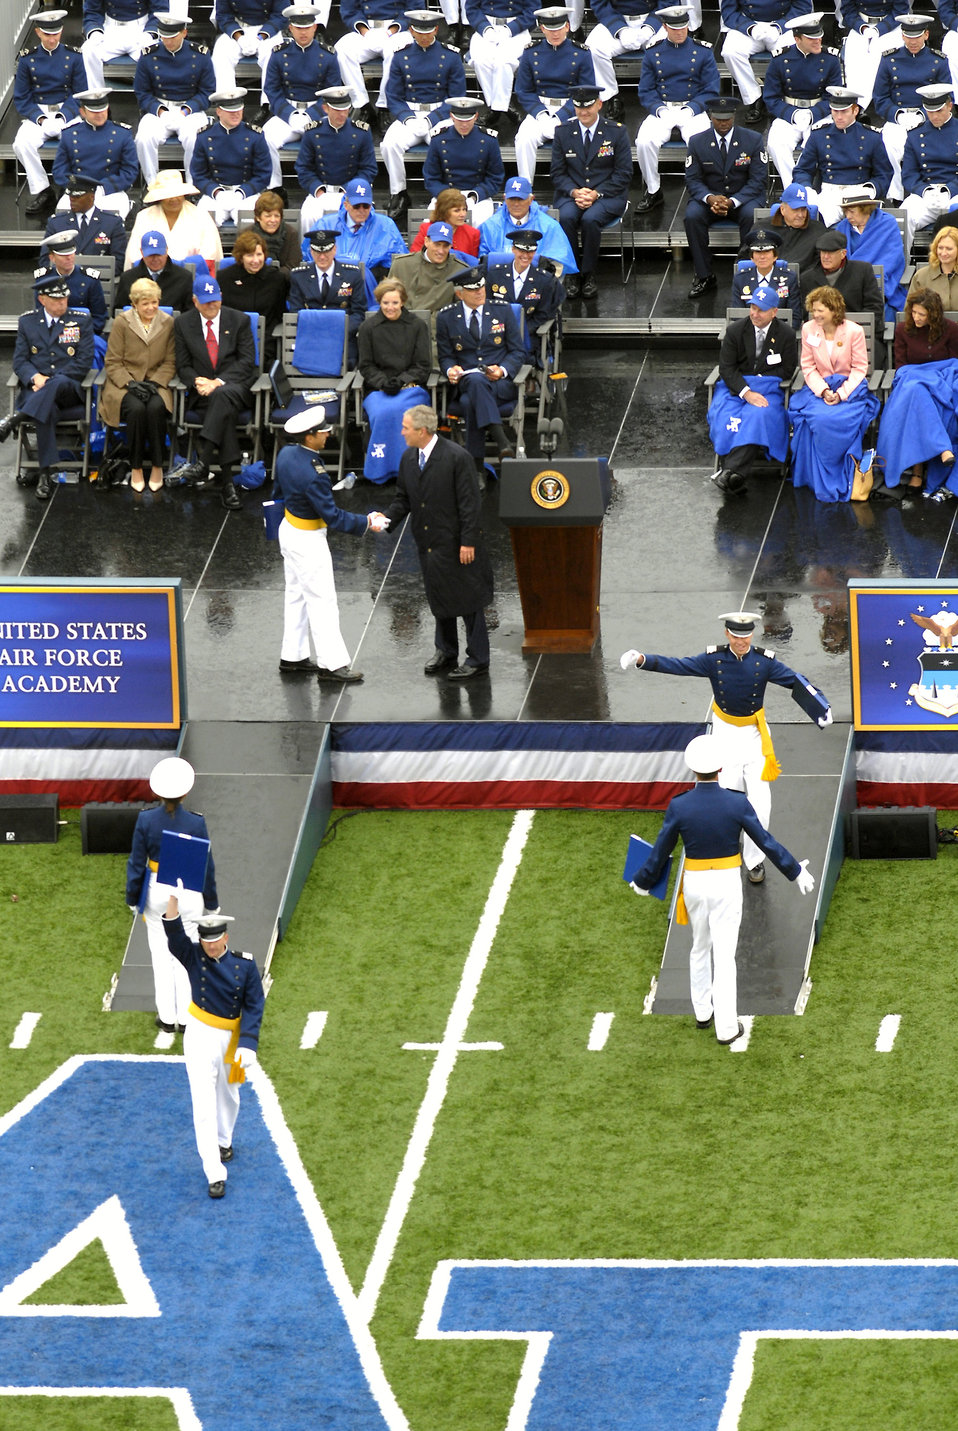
President speaks at Air Force Academy graduation

President George W. Bush congratulates a newly-commissioned second lieutenant during the 2008 U. S. Air Force Academy graduation ceremony at Falcon Stadium May 28.